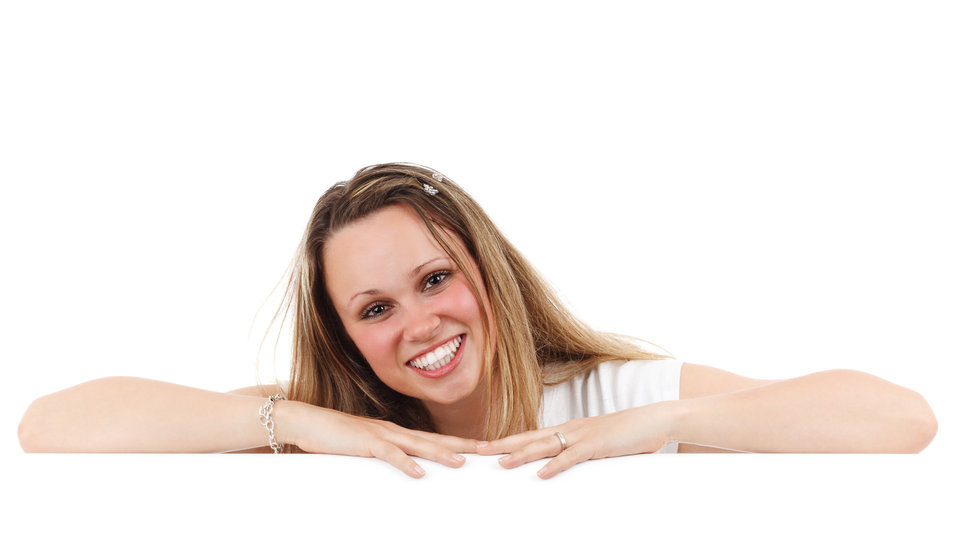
Woman above white board

Young woman smiling with hands above white board.